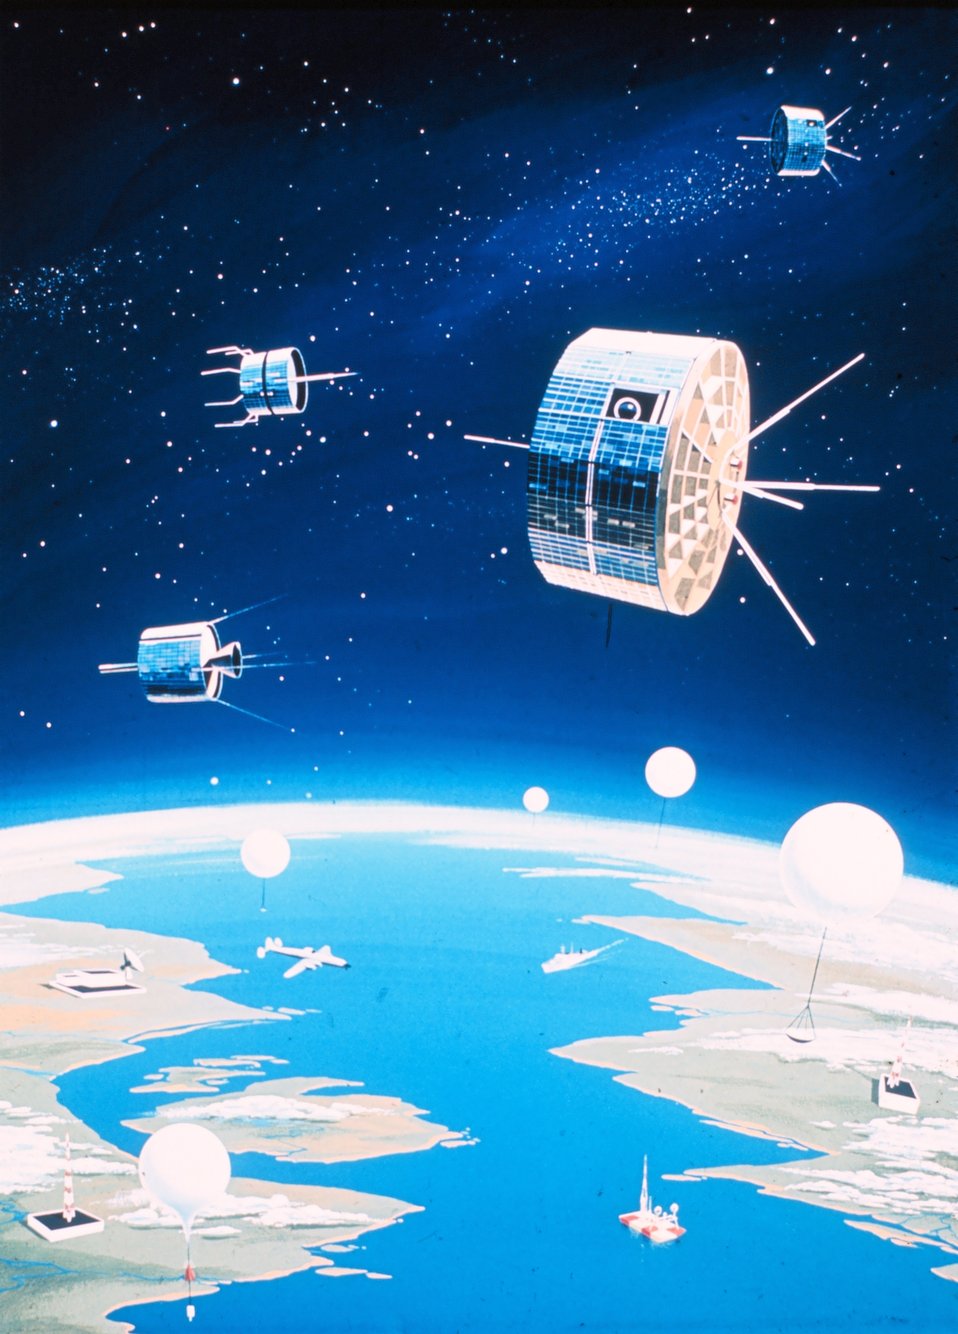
An artist's conception of a fully integrated environmental monitoring system including satellites, balloons, ships, aircraft, buoys, and data reception and processing facilities.